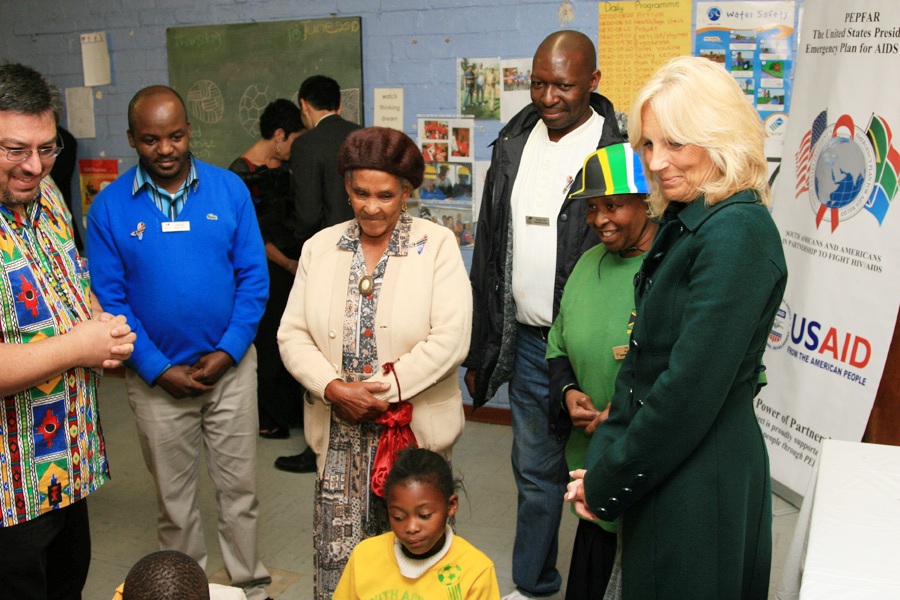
Dr. Jill Biden Meets With Staff and Children

Dr. Jill Biden, wife of Vice President Joseph Biden, meets with sutdents and staff at the Mapetla Day Care Centre in Soweto, Johannesburg, South Africa, on June 10, 2010.